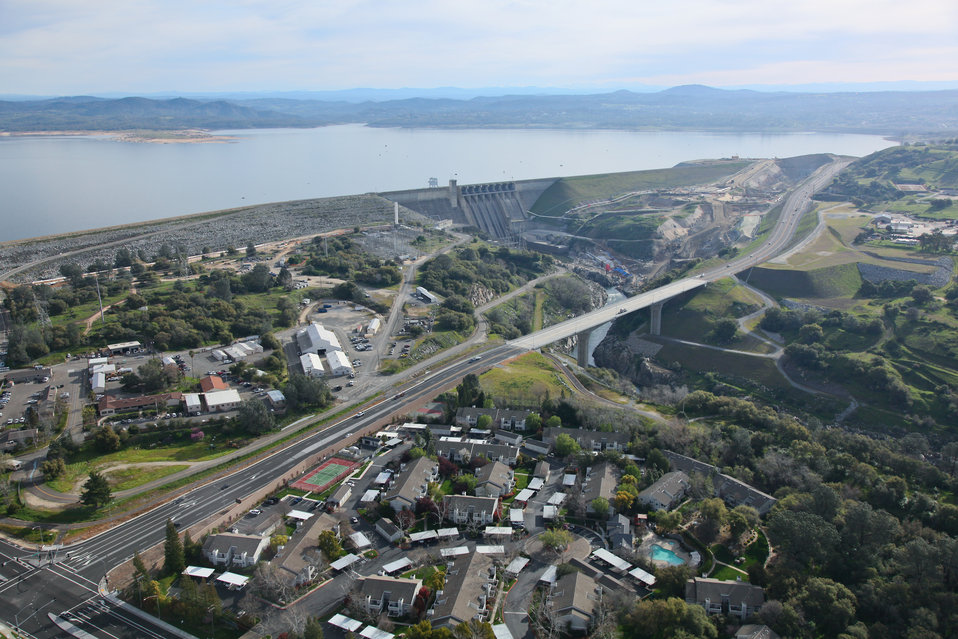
The New Folsom Lake Crossing Bridge

FOLSOM, Calif. (Jan. 24, 2011) - Looking east in an aerial view of the Folsom Dam, after construction of the Folsom Lake Crossing bridge crossing the American River. The U. S. Army Corps of Engineers Sacramento District was authorized to build the bridge in 2004, after security concerns closed the road atop the dam, a major commuter throughway, in 2003. The Corps completed the bridge in March 2009.